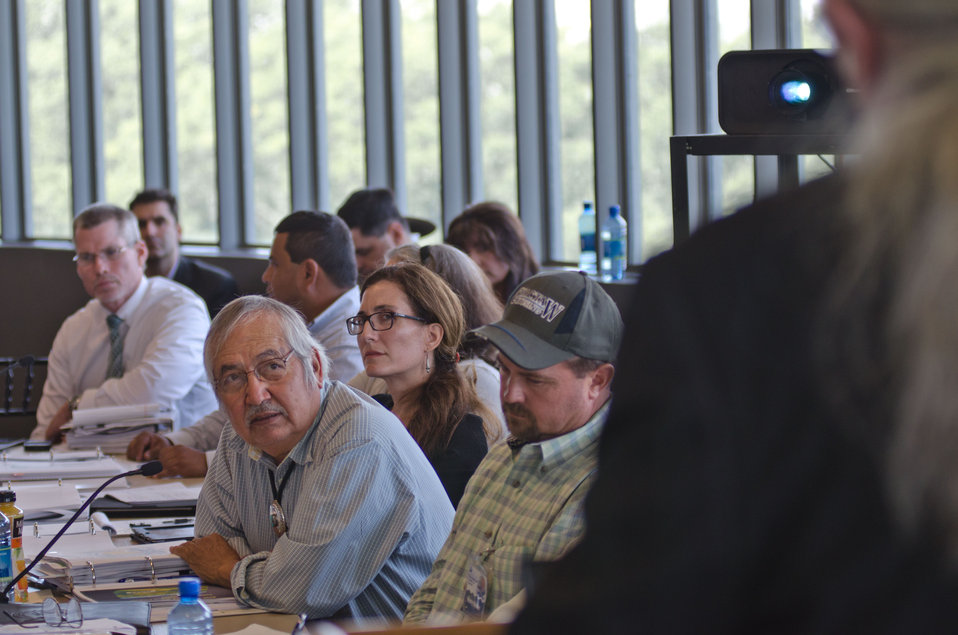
Members of the Council for Native American Farming and Ranching listen to U.S. Department of Agriculture (USDA) Deputy Under Secretary Natural Resources and Environment (NRE) Arthur “Butch” Blazer speaking during the final day of the first business meeting of USDA’s Council for Native American Farming and Ranching (CNAFR) held at the National Museum of the American Indian in Washington, D.C. on Tuesday, Aug. 14, 2012. CNAFR was created to advise the Secretary on ways to eliminate barriers to participation for Native American Farmers and Ranchers in USDA programs. The Council was established as part of the Keepseagle settlement, and is conducted under the oversight of USDA's Office of Tribal Relations under the Office of the Secretary of Agriculture.